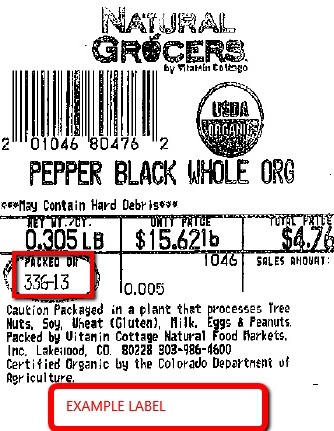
RECALLED – Organic Black Peppercorns

April 7, 2014 – Product Recall – Natural Grocers by Vitamin Cottage Issues Recall on Organic Black Peppercorns Due to Possible Health Risk.